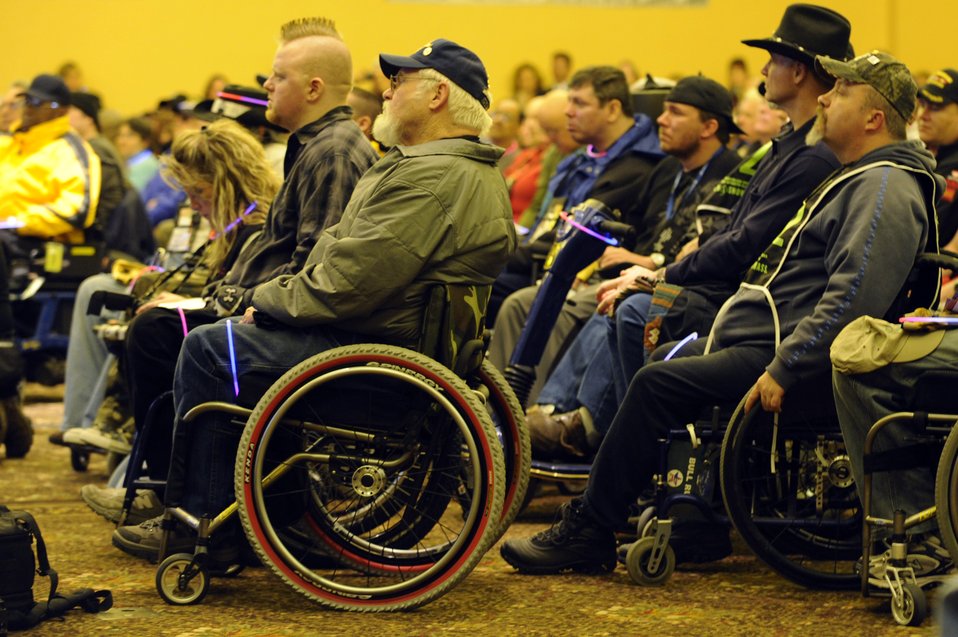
Luke Airmen assist disabled veterans at ski clinic

Veterans attend the opening ceremony inside The Silver Tree Hotel March 29 for the 23rd National Disabled American Veterans Winter Sports Clinic in Snowmass Village, Colo. The event is sponsored by the Department of Veterans Affairs and Disabled American Veterans.